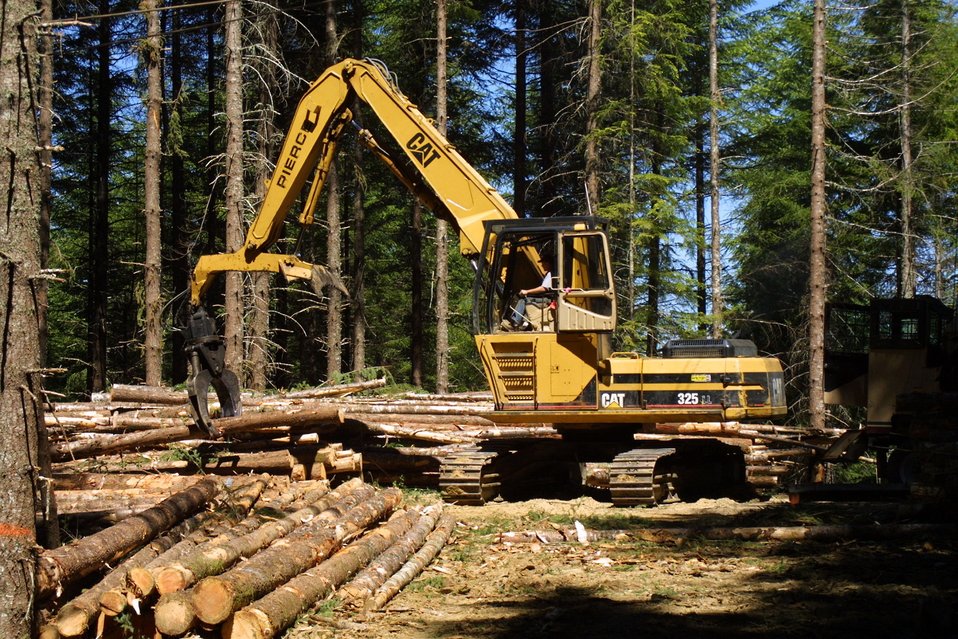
Camas East Timber Sale in Late Successional Reserve.